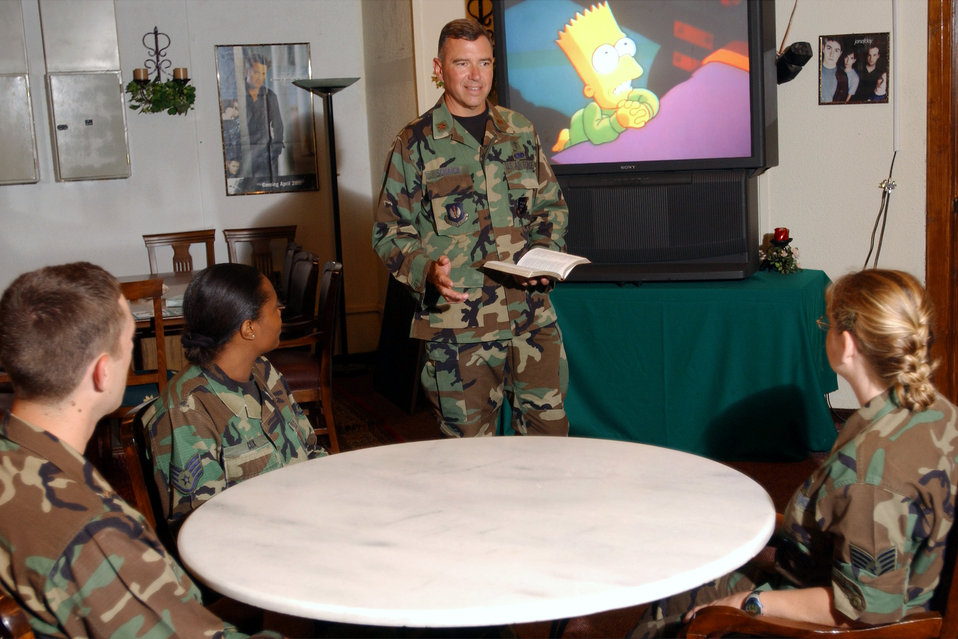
Bible study

INCIRLIK AIR BASE, Turkey (AFPN) -- Chaplain (Maj.) Steve Schaick, 39th Air Base Group senior Protestant chaplain, leads a Bible study here based on